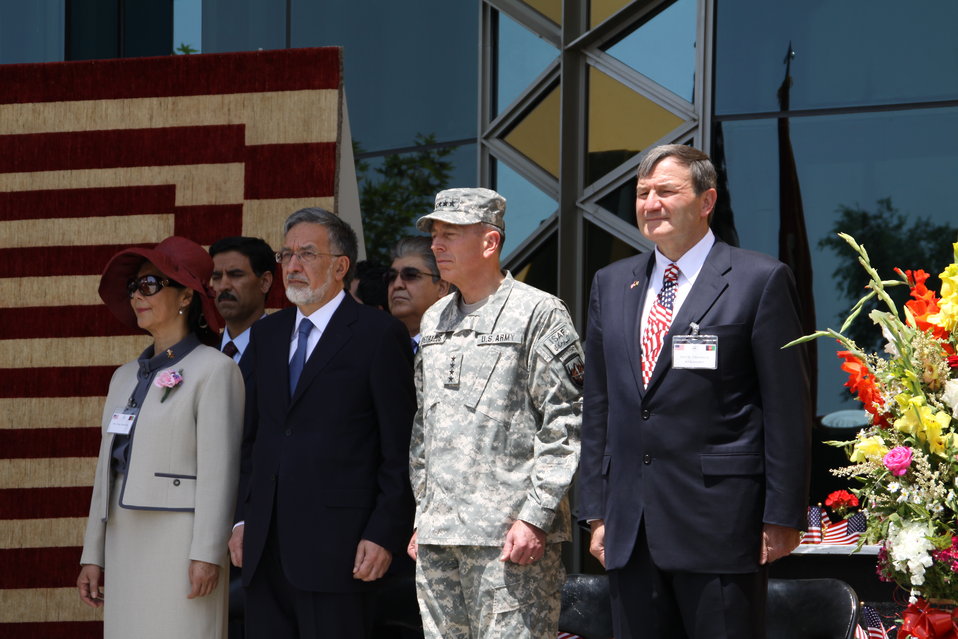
Kabul Official July 4th Celebration